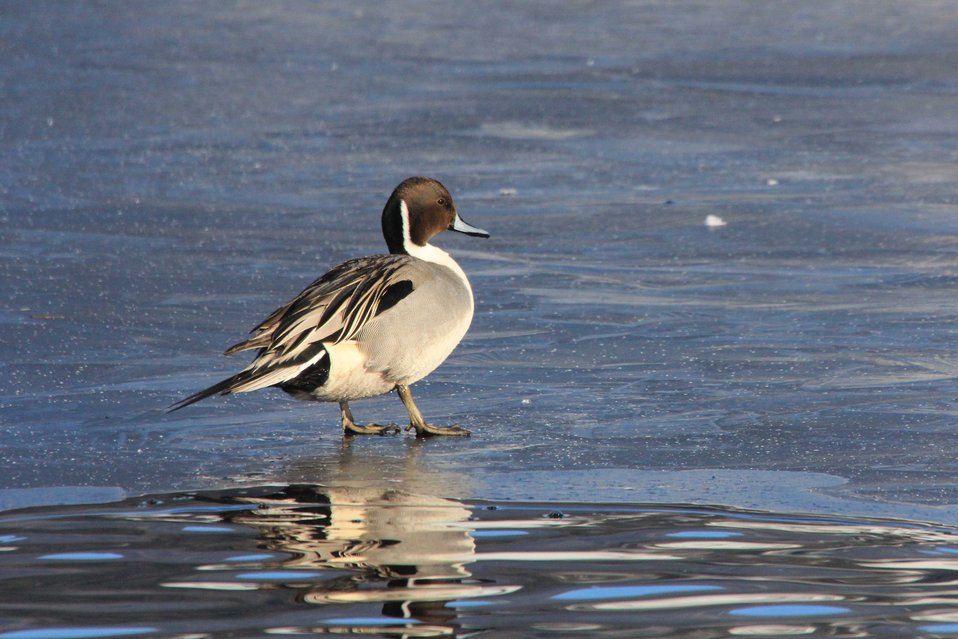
Northern Pintail

A Northern Pintail duck looks spectacular in the late afternoon sun at the National Elk Refuge.

Credit: USFWS / Ann Hough, National Elk Refuge volunteer